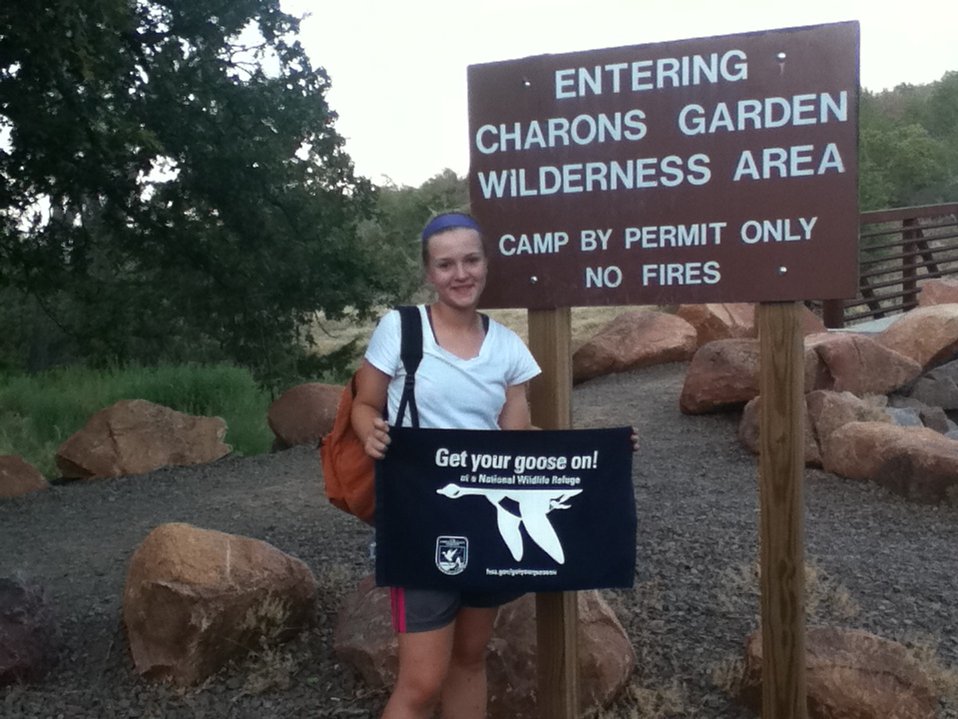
Get Your Goose On!

Wichita Mountains National Wildlife Refuge in Oklahoma.